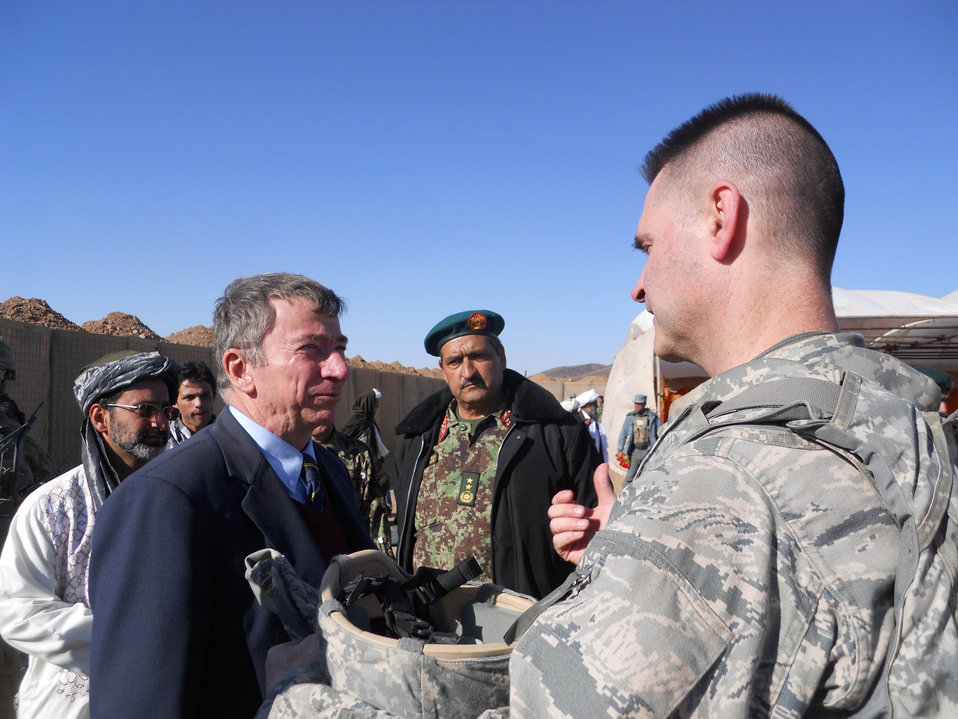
Air Force, Navy officers help develop Afghan hospital project

Air Force Col. John Hokaj, the commander of the 838th Air Expeditionary Air Advisory Group, discuss a hospital's impact to Shindand, Afghanistan, with U.S. and Afghan dignitaries and military members Jan. 28, 2012. Hokaj and the dignitaries were on hand for the groundbreaking ceremony for a new hospital near Shindand Air Base, Afghanistan.